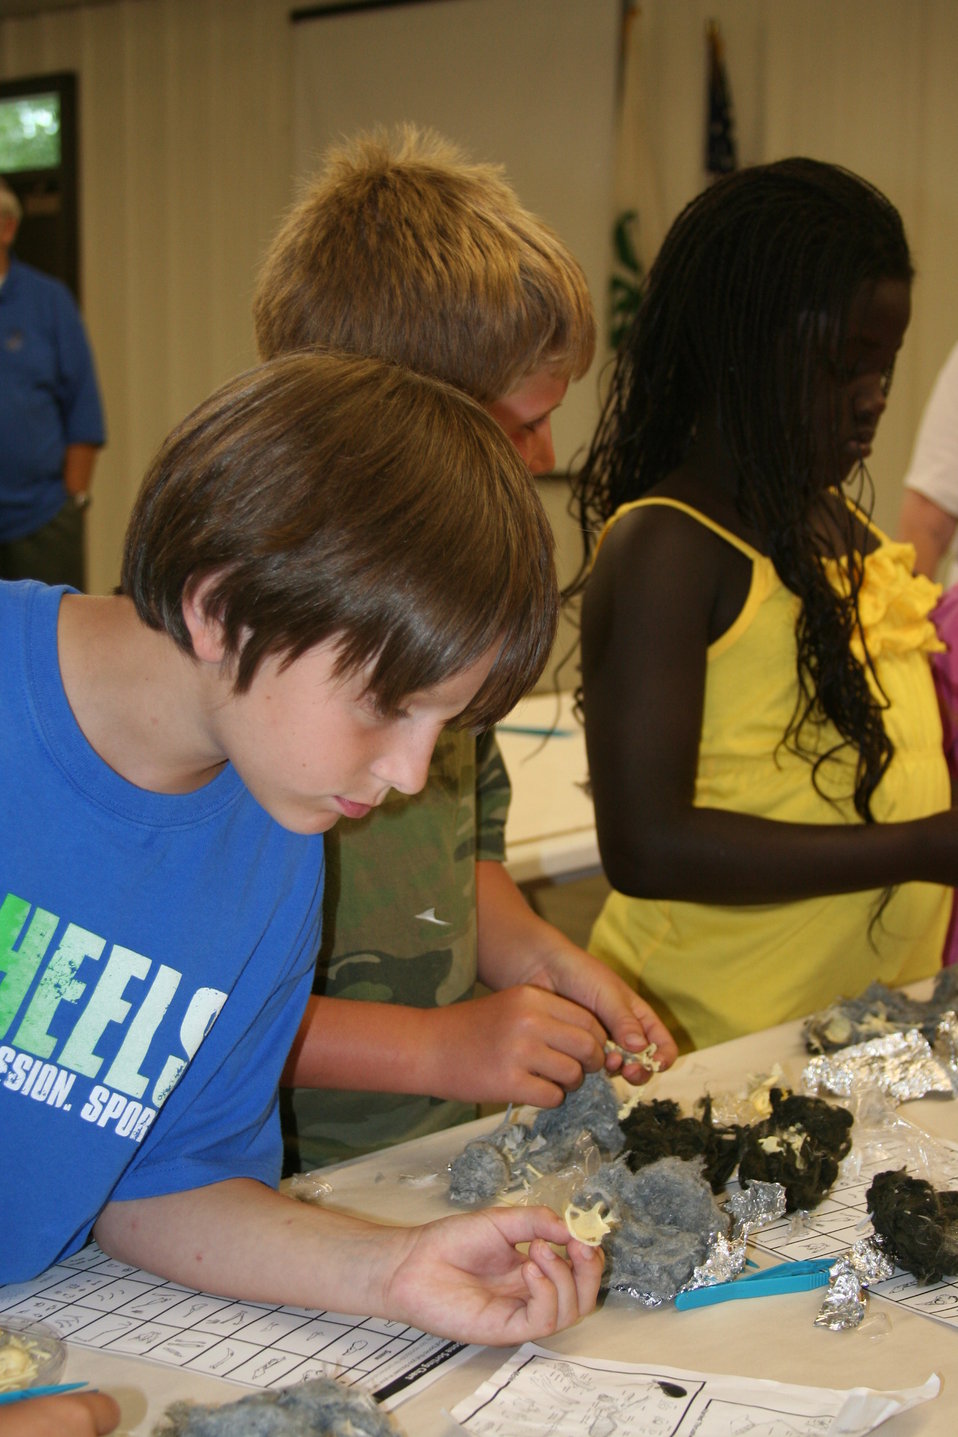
Creatures of the Night 2011